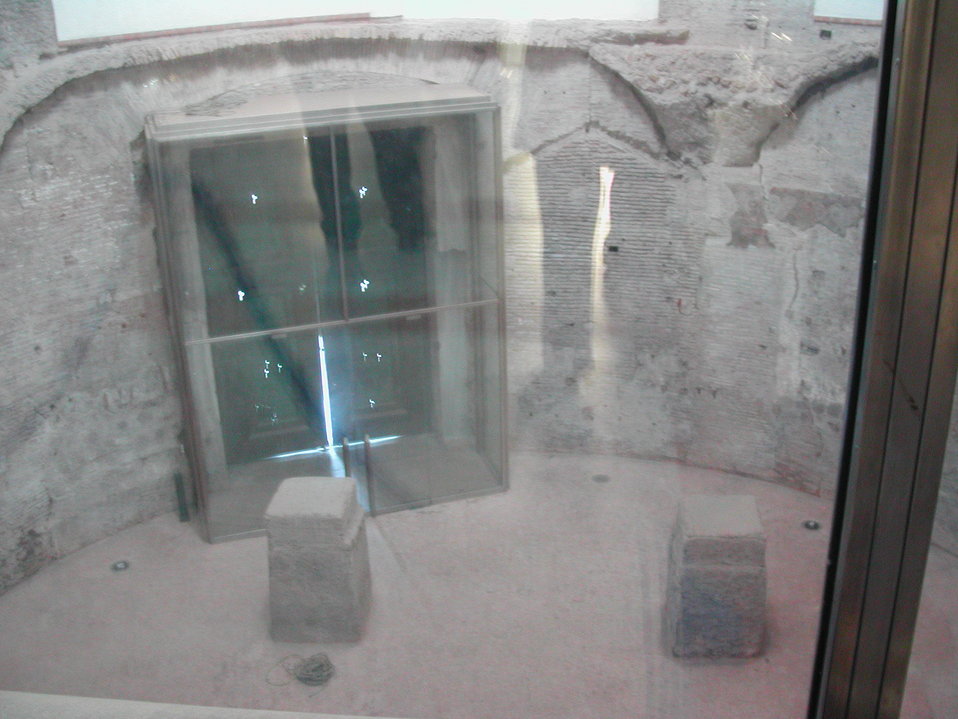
06 tempio di romolo dentro ss cosma e damiano